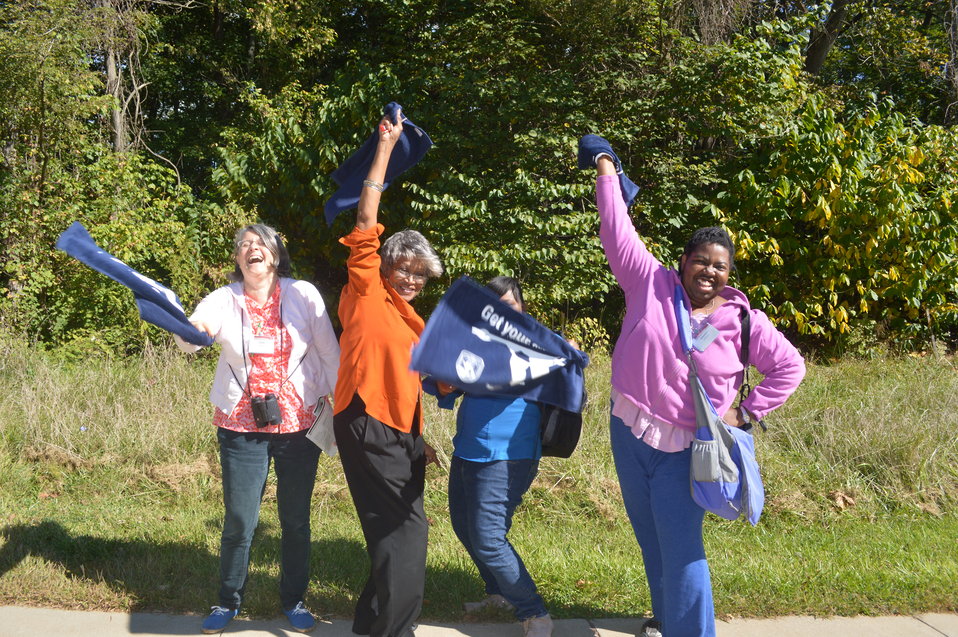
Get Your Goose On!

Photo taken at the National Conservation Training Center in Shepherdstown, WV.

Credit: Ryan Moehring / USFWS

#GetYourGooseOn